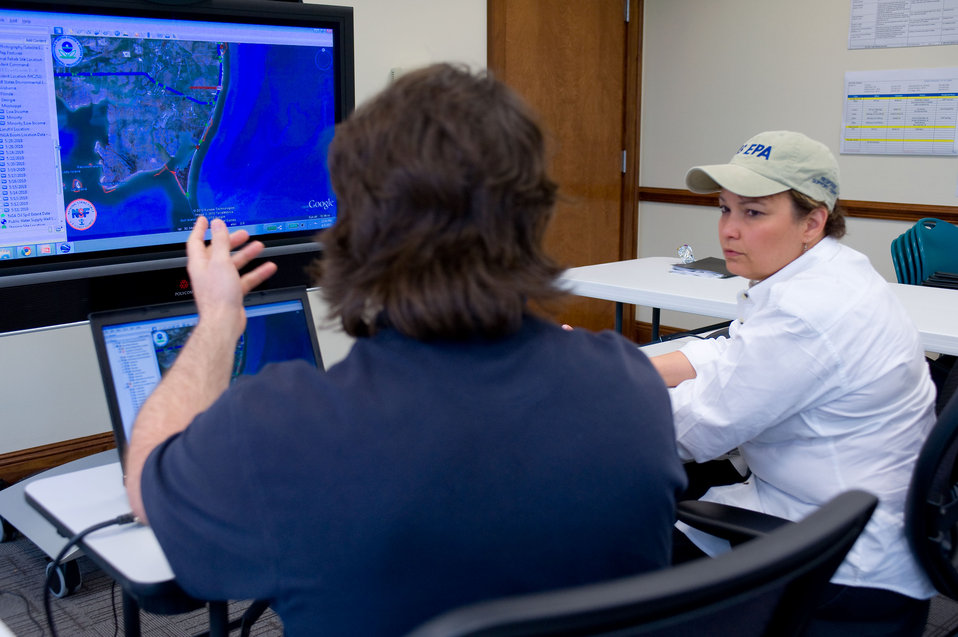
June 3, Administrator Jackson stops by the Mobile, Ala command post

Responders give Administrator Jackson a tour of the command post's capabilities.